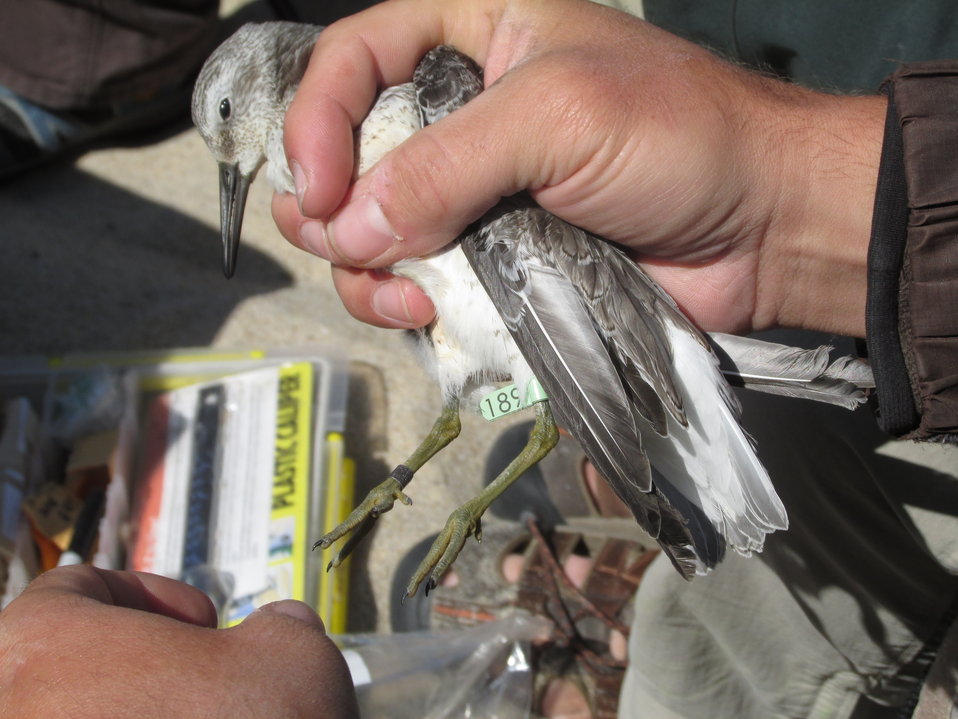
Red knot cannon netting in Cape Cod

This juvenile red knot has just received a Bird Banding Laboratory metal band with a unique number and an alpha-numeric flag that is also uniquely coded. The lime green color of the flag means it was banded in the U.S.